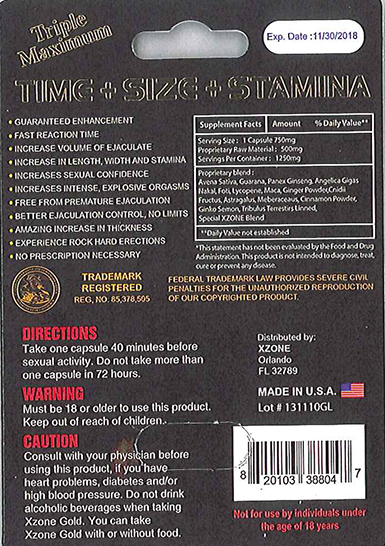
RECALLED – Dietary Supplement

April 1, 2014 – Product Recall – Nova Products, Inc. Issues Voluntary Nationwide Recall of Dietary Supplements with Undeclared Active Pharmaceutical Ingredients.